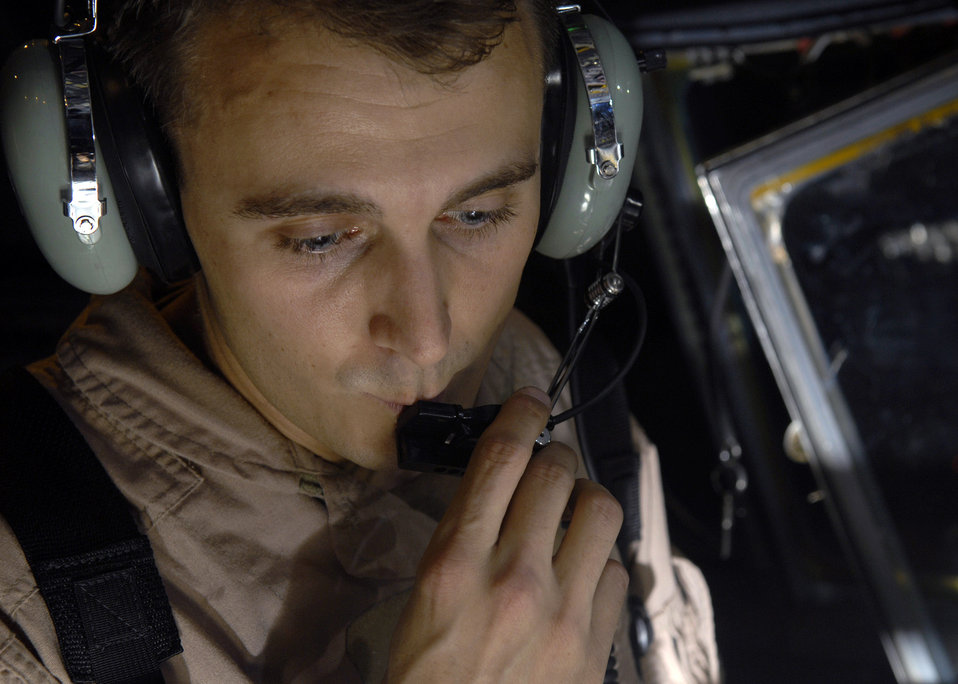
Getting it right, before the flight

Tech. Sgt. James Brady communicates with the crew chief to check if the exterior lights of a C-130 Hercules are operating properly. Communication between the flight engineer and the crew chief is vital because it allows Sergeant Brady to ensure the aircraft is responding to adjustments he makes inside before takeoff. He is assigned to the 777th Expeditionary Airlift Squadron and is deployed from Little Rock Air Force Base, Ark.